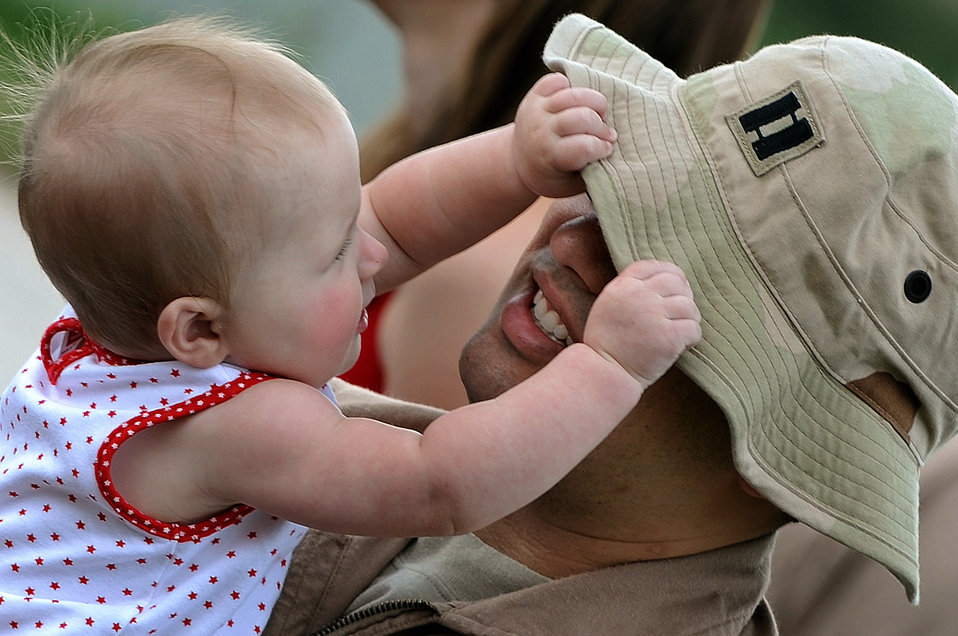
Parting is such sweet sorrow

Capt. Steven Fowler holds his 7-month-old daughter, Makenna, before deploying July 22 at Ellsworth Air Force Base, S.D. Captain Fowler, a 34th Bomb Squadron weapons system operator, is deploying to Southwest Asia in support of operations Iraqi Freedom and Enduring Freedom.